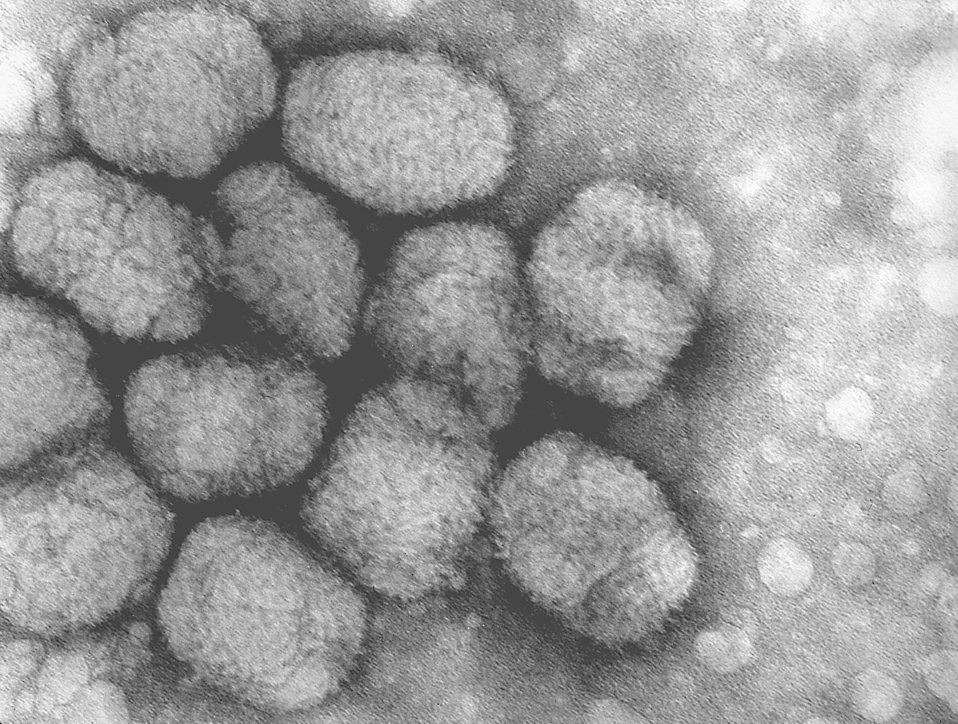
A transmission electron micrograph of smallpox viruses.